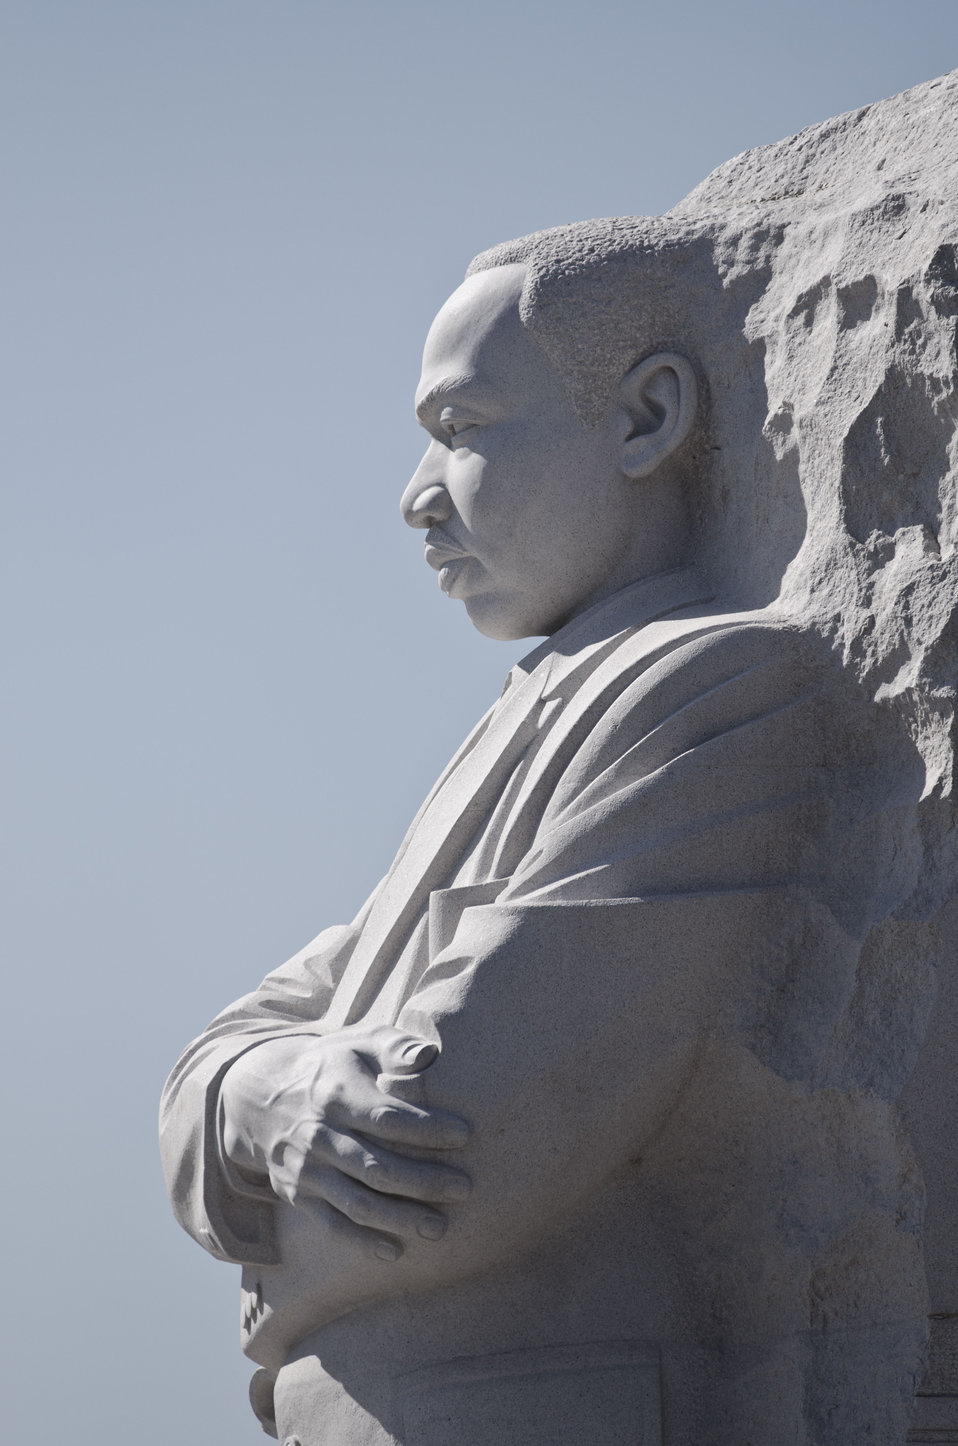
Martin Luther King, Jr. Memorial in Washington, DC, on Saturday, October 8, 2011.